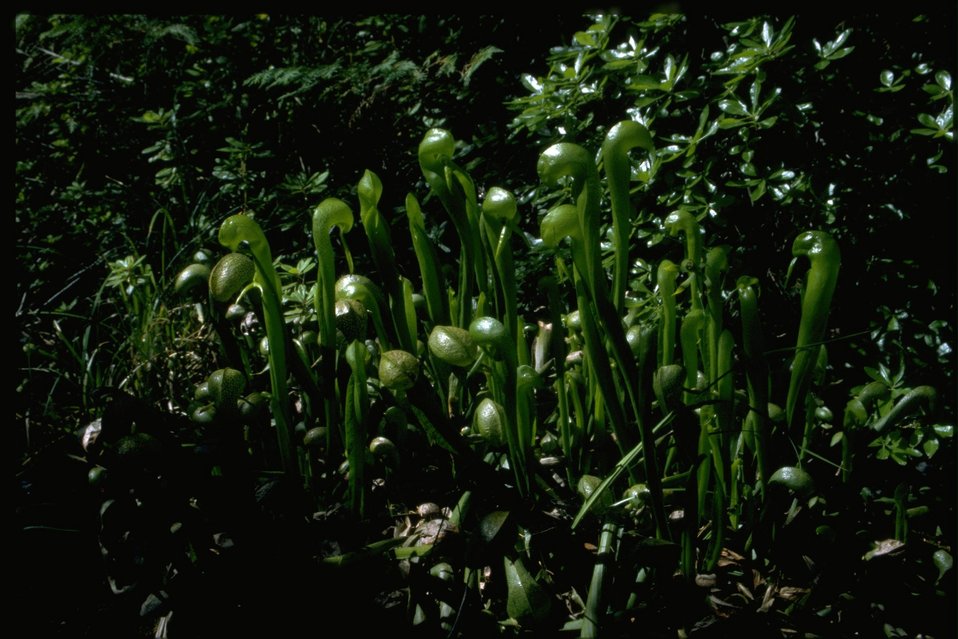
Medium shot of Cobra Lily, Darlingtonia californica.